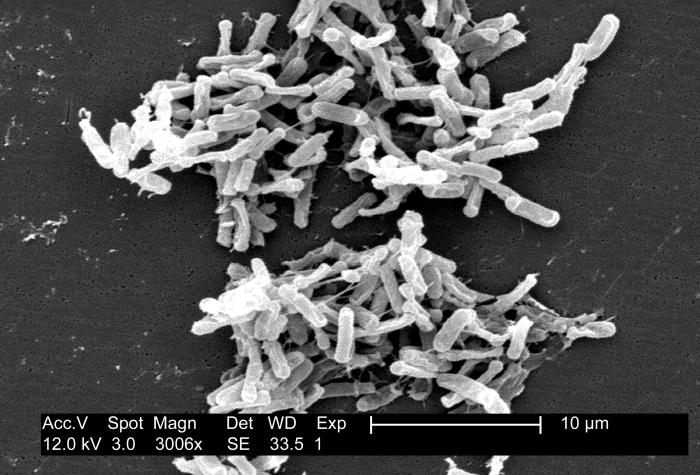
This micrograph depicts Gram-positive C. difficile bacteria from a stool sample culture obtained using a .1�m filter. See PHIL 9999 for a colorized version of this image.